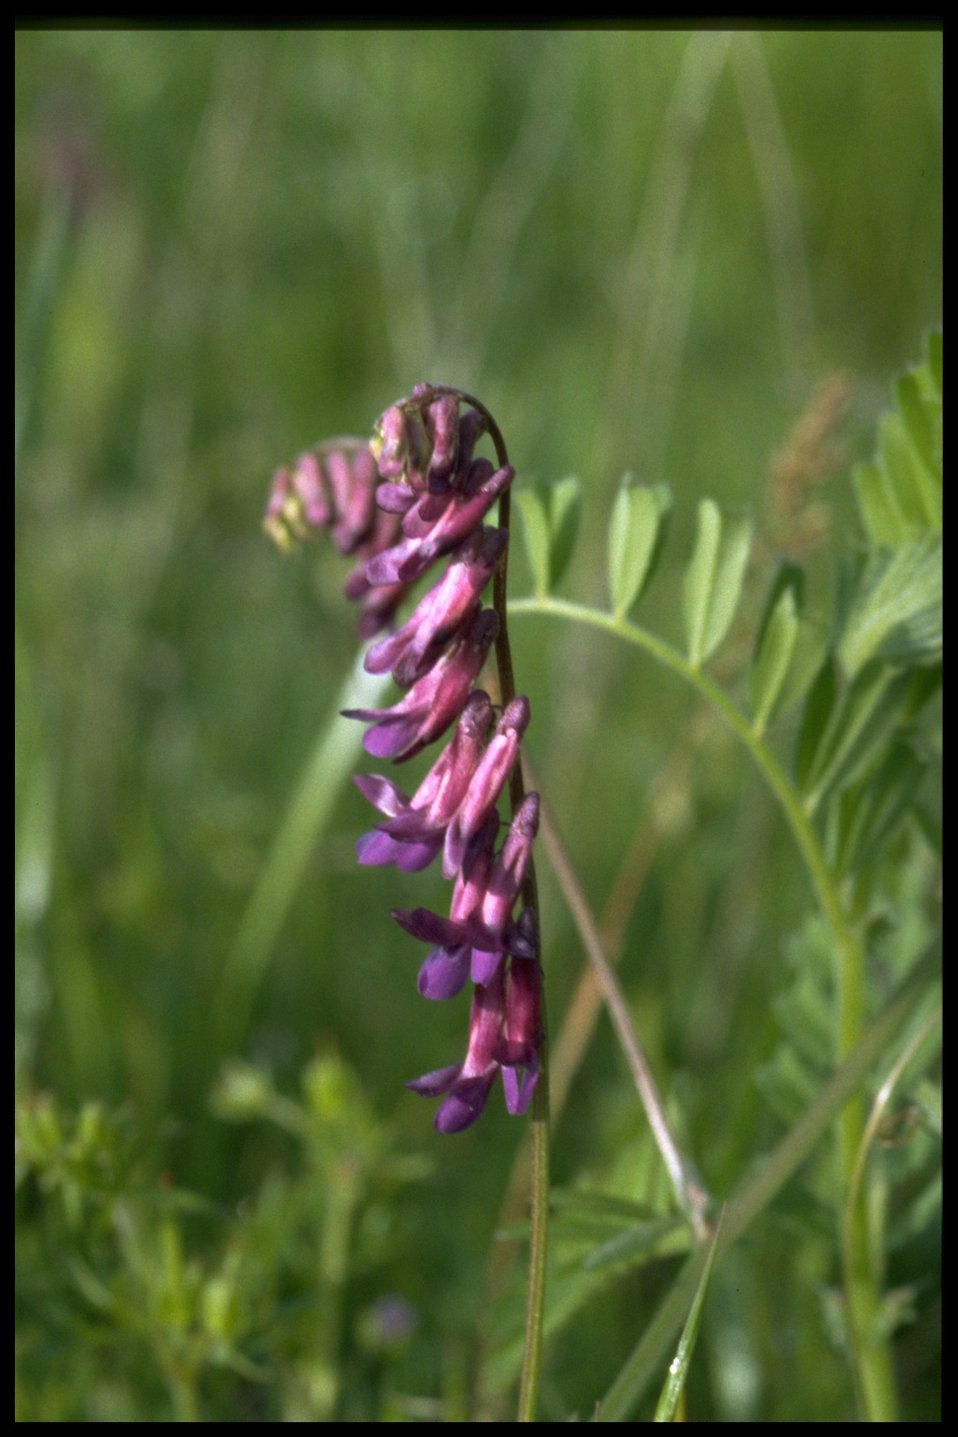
Medium shot of Vicia americana.